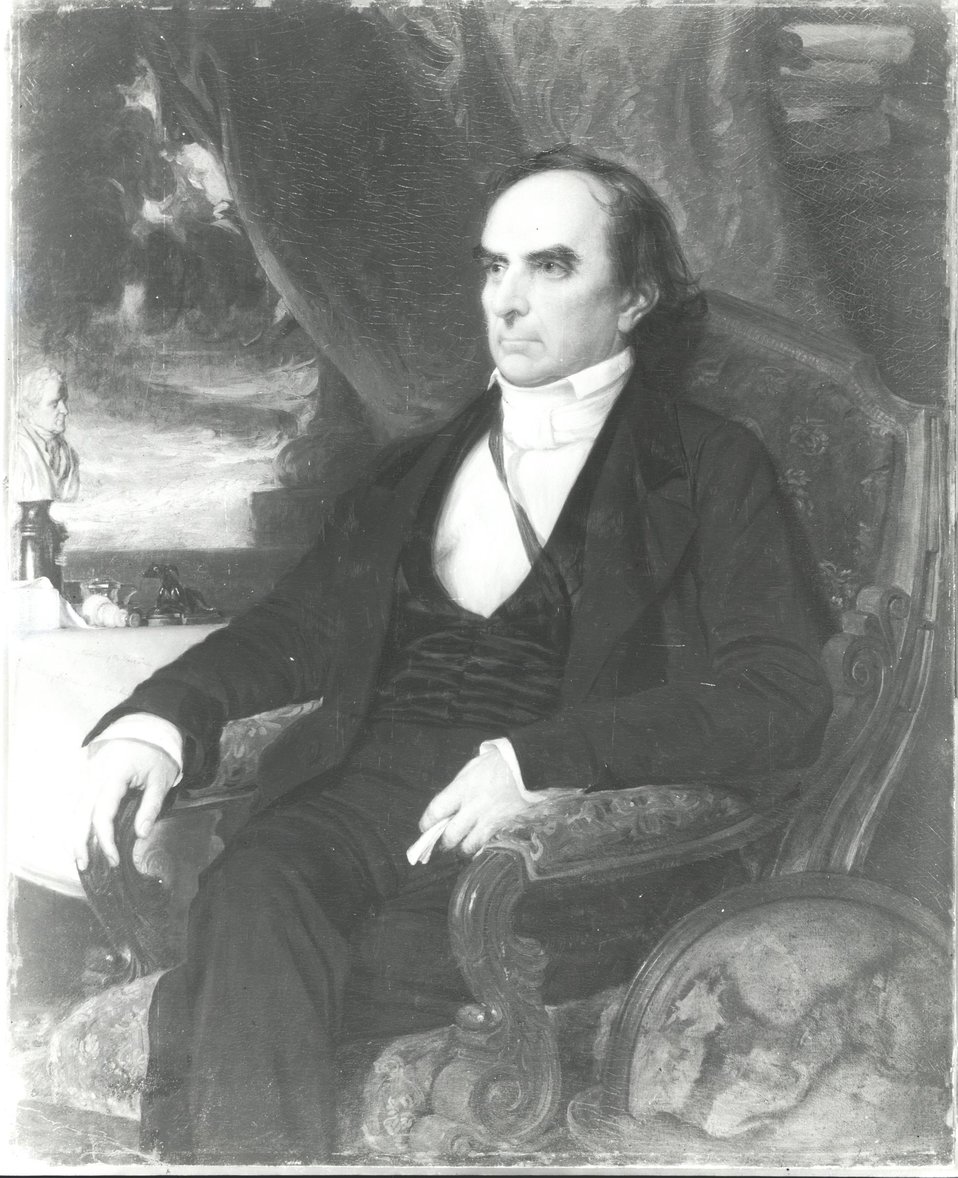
Daniel Webster, U.S. Secretary of State, March 6, 1841 to May 8, 1843